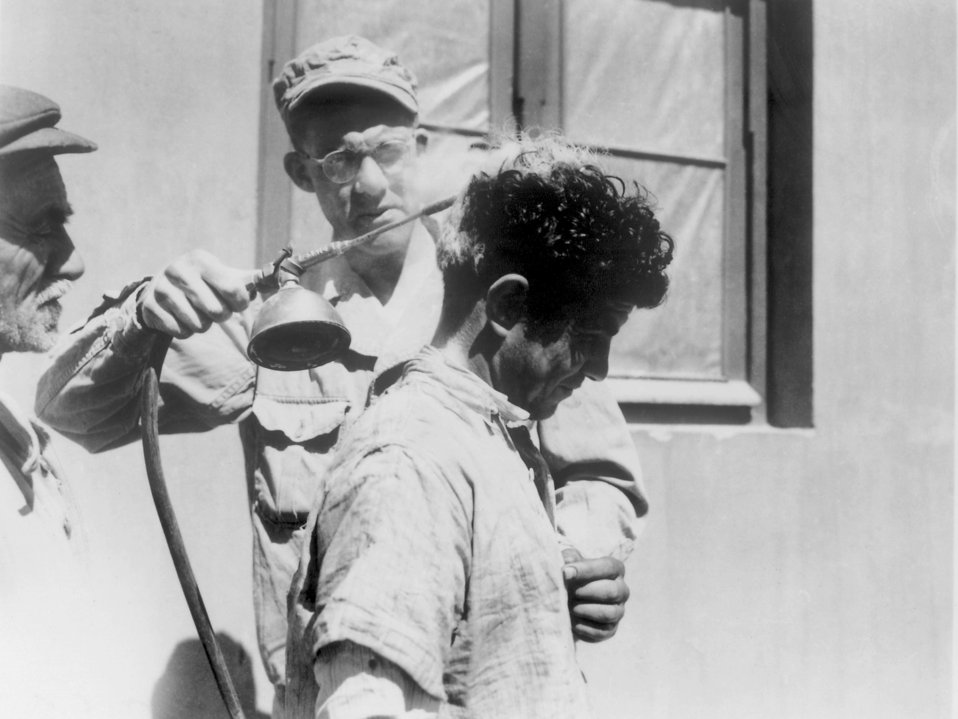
A U.S. Soldier demonstrates the use of DDT-hand spraying equipment.